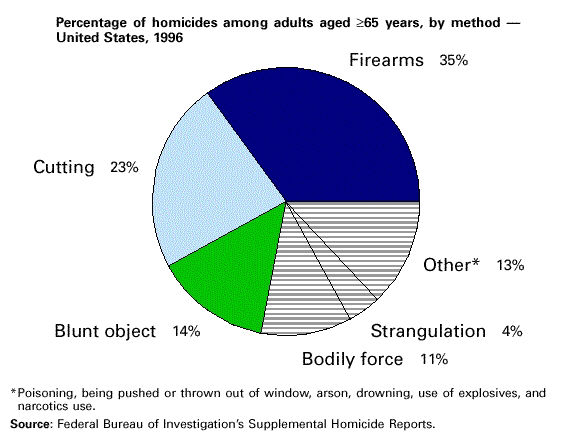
Percentage of homicides among adults aged 65 years and older, by method.